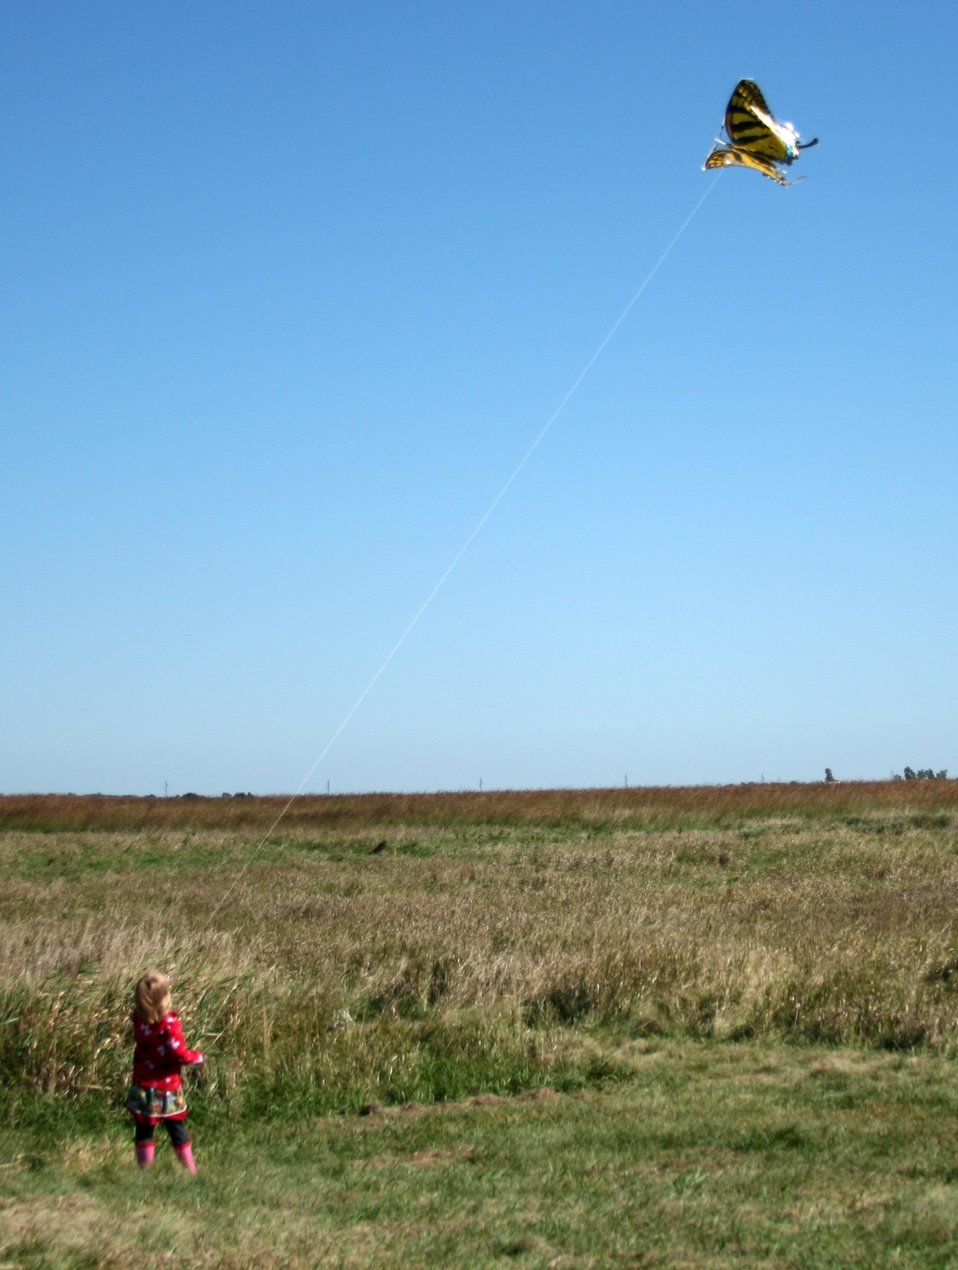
Young Girl and Kite

A young girl flies a kite on a beautiful September afternoon in 2010 at the Huron WMD. The Kites N Flight event focused on getting kids outdoors, and featured an educational piece on bird flight and migration.